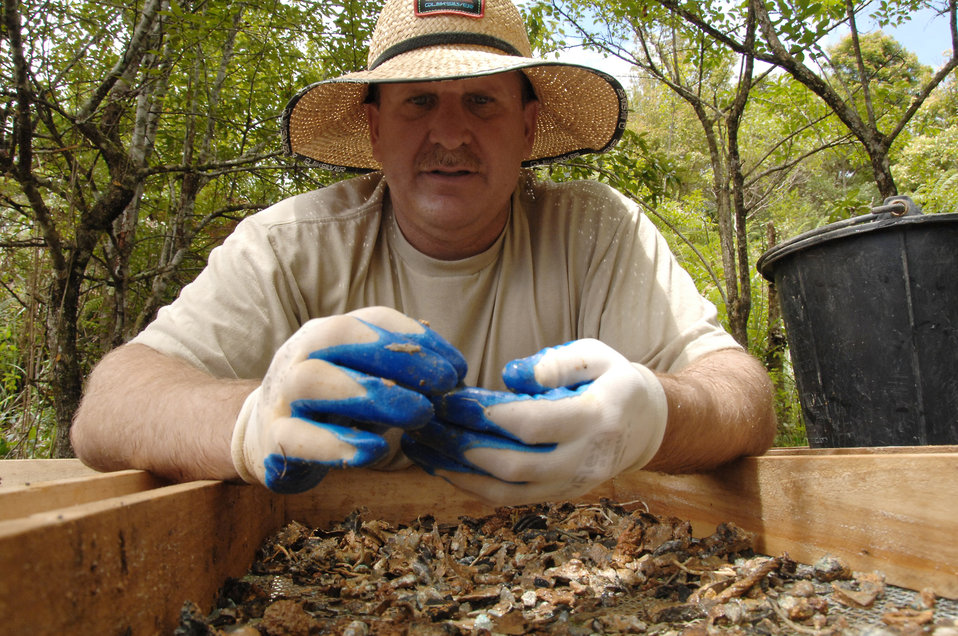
Recovery mission takes a wild turn for Charleston senior NCO

Master Sgt. Wesley Housel sifts through dirt while conducting a recent recovery mission in the Houaphan Province, Lao People's Democratic Republic. Sergeant Housel was a digger assigned to a 10-member recovery team on a 36-day deployment to Laos in an attempt to recover the remains of Americans lost during the Vietnam War. Sergeant Housel is assigned to the 437th Operations Support Squadron and was deployed in support of the Joint POW/MIA Accounting Command.